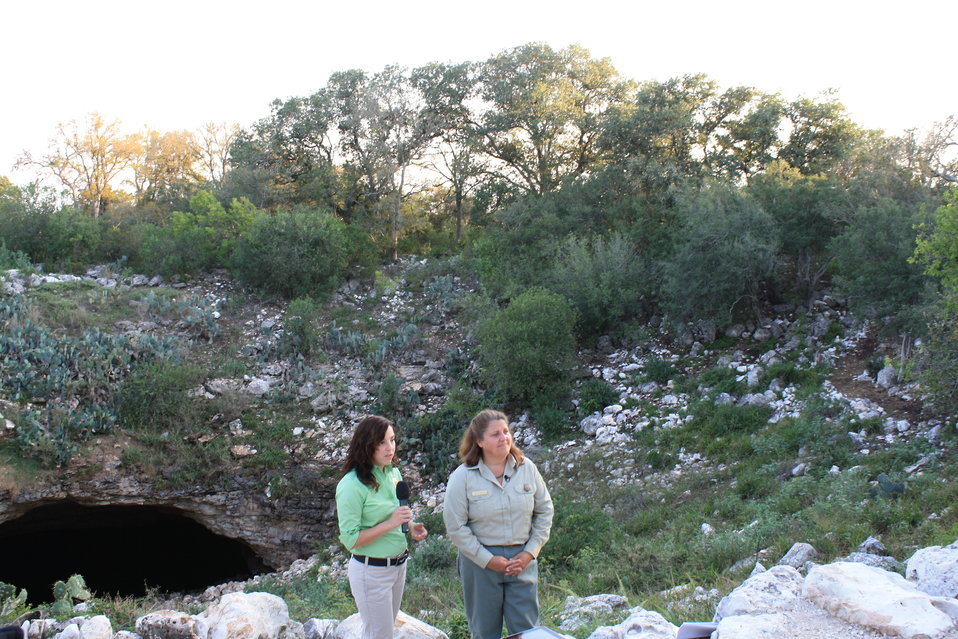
USFWS and US Forest Service staff during broadcast

USFWS staff Ann Froschauer and US Forest Service staff Sandy Frost during BatsLIVE broadcast